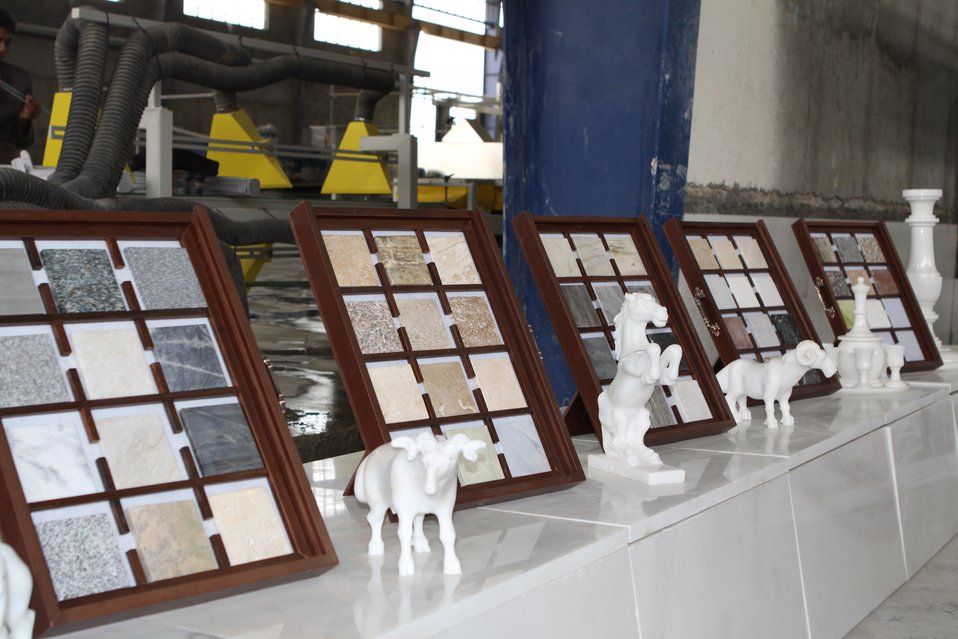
100525 Hirat Marble Conference 132